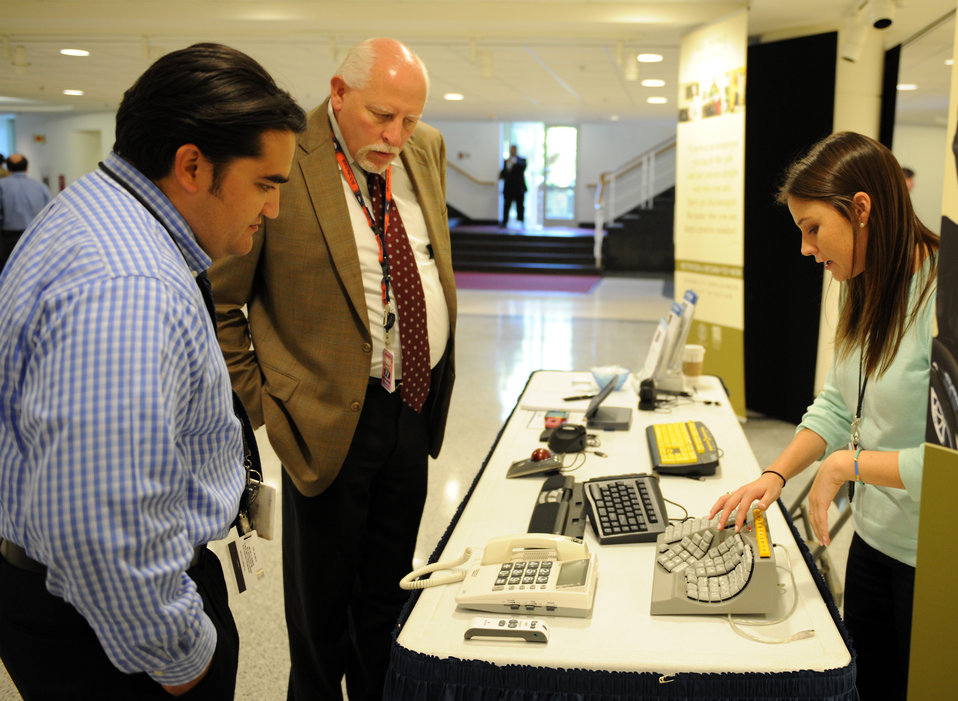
Diversity

Erin Anderson demonstrates a keyboard to Ladd Ryan and David Page at an event held by the Headquarters Air Force to recognize National Disability Employment Awareness Month at the Pentagon on Oct. 1. The intent of the event was to educate Air Force employees and managers on various aspects of Disability Employment and Accommodations. Anderson is a Computer/Electronic Accommodations Program (CAP) technical coordinator, and Ryan and Page are Office of Under Secretary for Intelligence mission assurance planners.